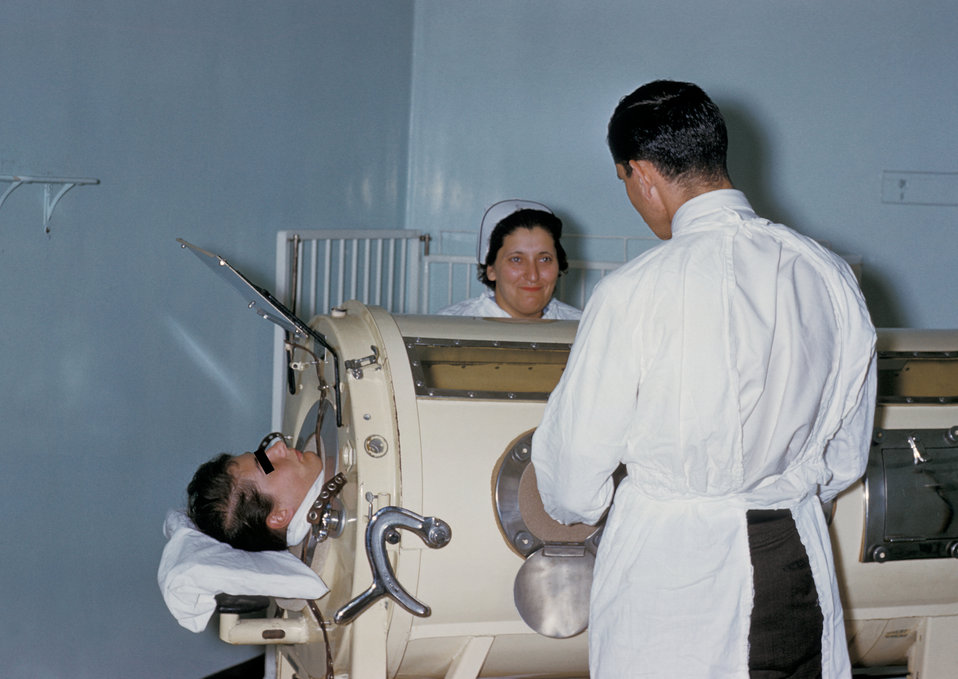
Hospital staff are examining a patient in a tank respirator, iron lung, during the Rhode Island polio epidemic.